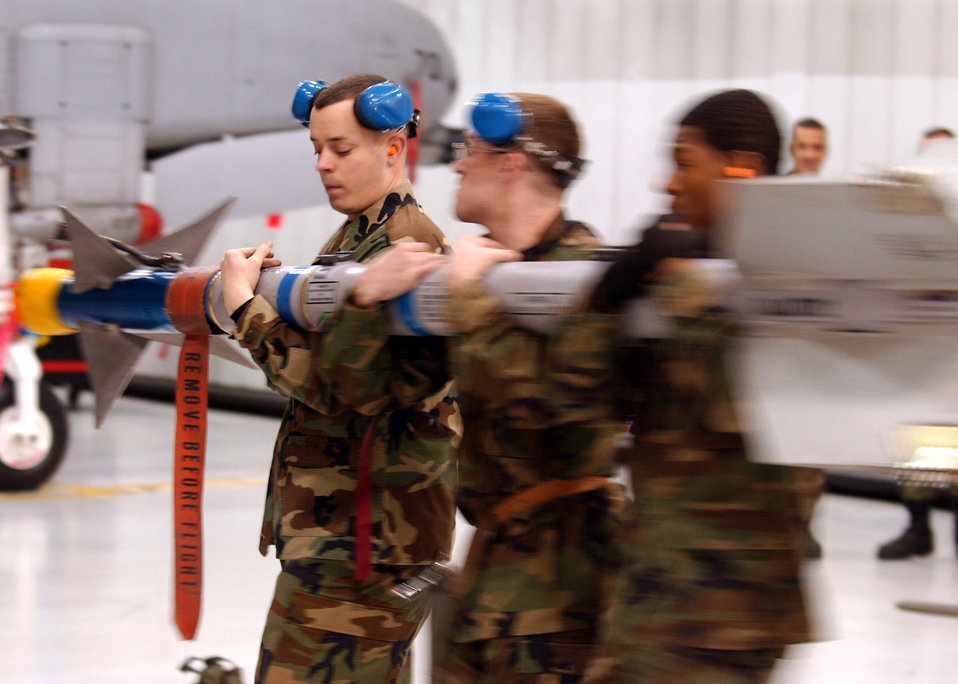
Competing for load crew honors

Staff Sgt. Michael Woroniecki (center), Senior Airman Justin Martin (left) and Senior Airman Keitric King transport an AIM-9 Sidewinder missile to be loaded onto an A-10 Thunderbolt II for the Weapons Standardization Load Crew of the Year Competition Jan. 11 at Eielson Air Force Base, Alaska. The competition evaluates technical proficiency, safety procedures and overall time. The 355th Aircraft Maintenance Unit's overall time was 50 minutes and 17 seconds.